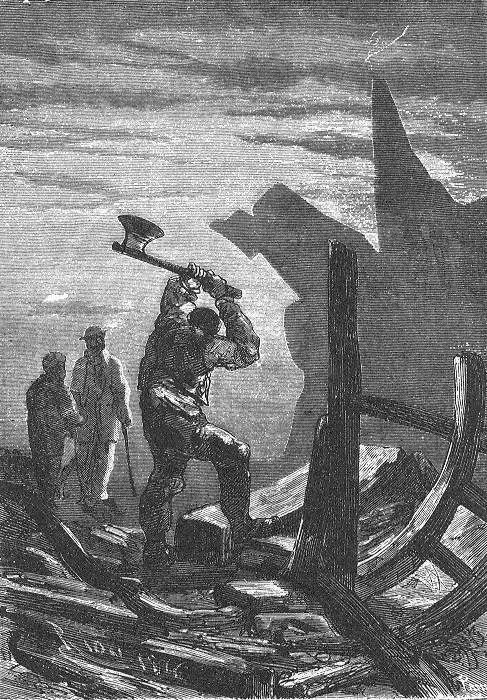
An illustration from Jules Verne's novel 'Journeys and Adventures of Captain Hatteras', part II: 'The Field of Ice' drawn by Édouard Riou and/or Henri de Montaut. Polski: Ilustracja powieści Juliusza Verne'a 'Podróże i przygody kapitana Hatterasa', części II: 'Pustynia lodowa' autorstwa Édouarda Riou i/lub Henri de Montauta. Français : Jules Verne: 'Voyages et aventures du capitaine Hatteras - Le désert de glace', Édouard Riou et Henri de Montaut.